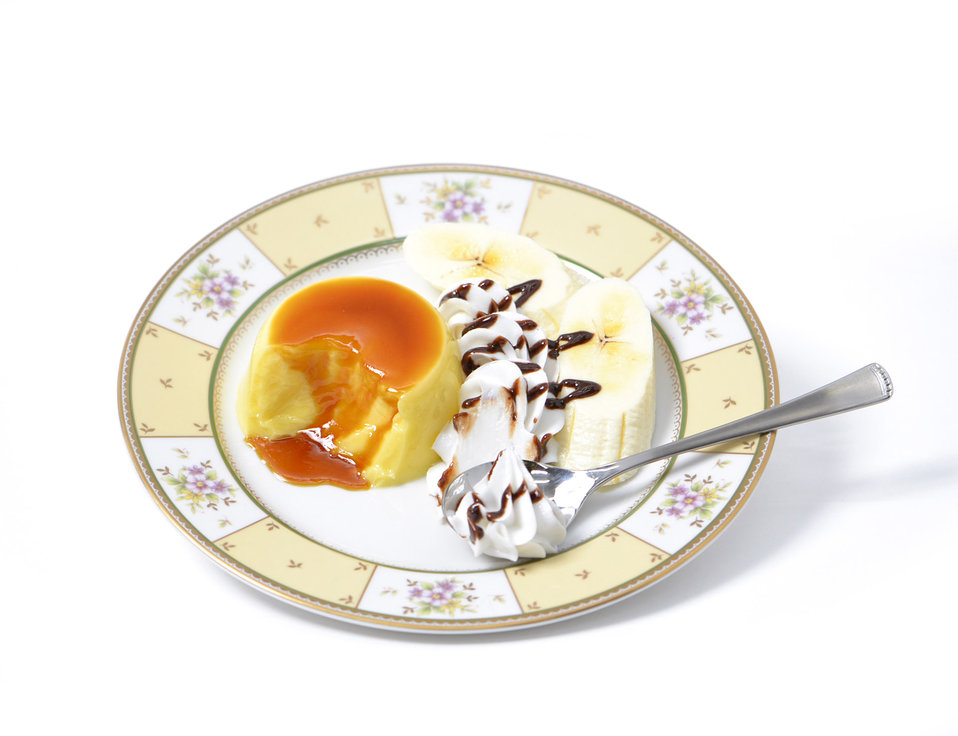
Pudding with whipped cream

Whipped cream,pudding,sweets,sweet,dessert,chocolate.